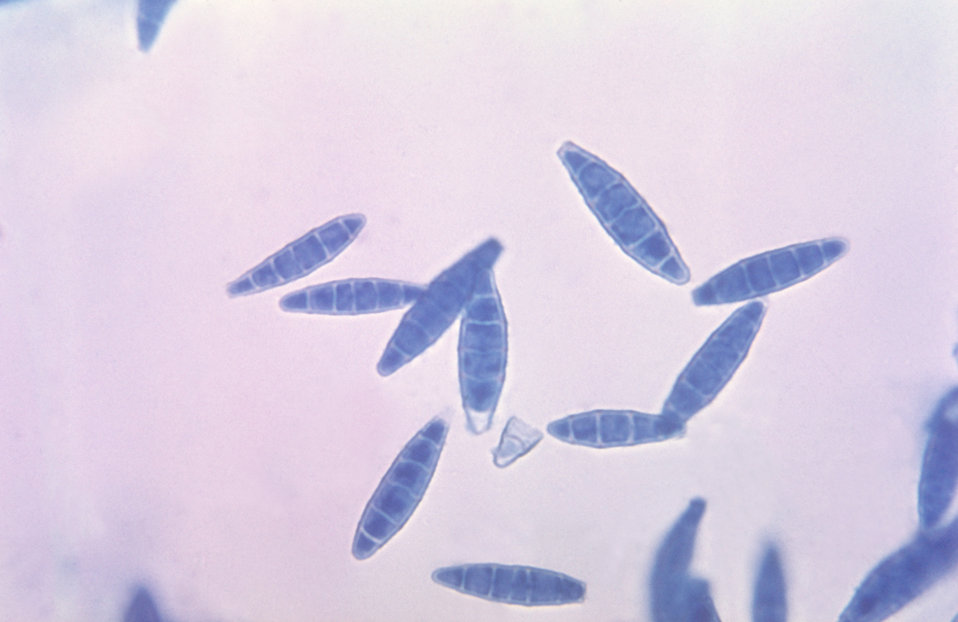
This photomicrograph shows the spindle-shaped macroconidia of the fungus Microsporum gypseum.